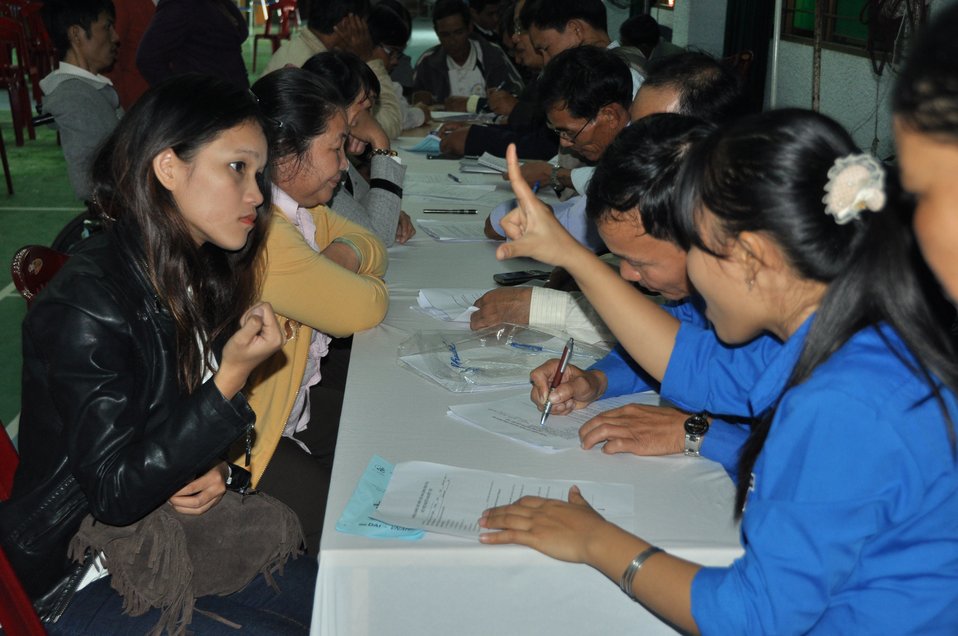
USAID supports the survey of PWD satisfaction with disability services.

Danang, December 3, 2013.